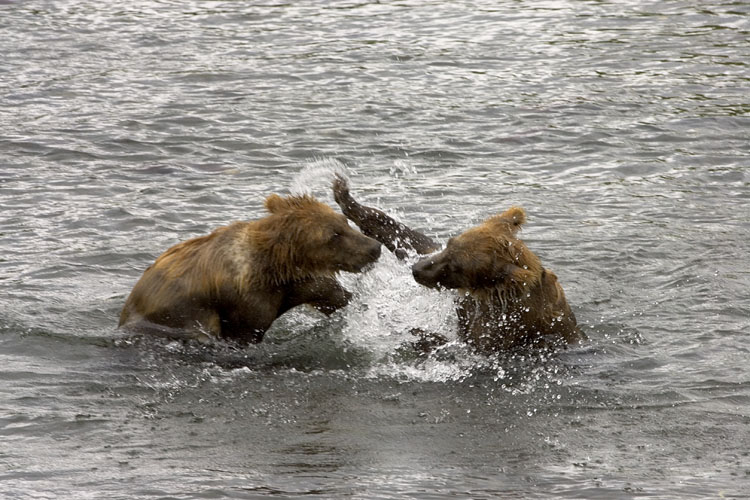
Kodiak Brown Bears

Playful Kodiak Bears